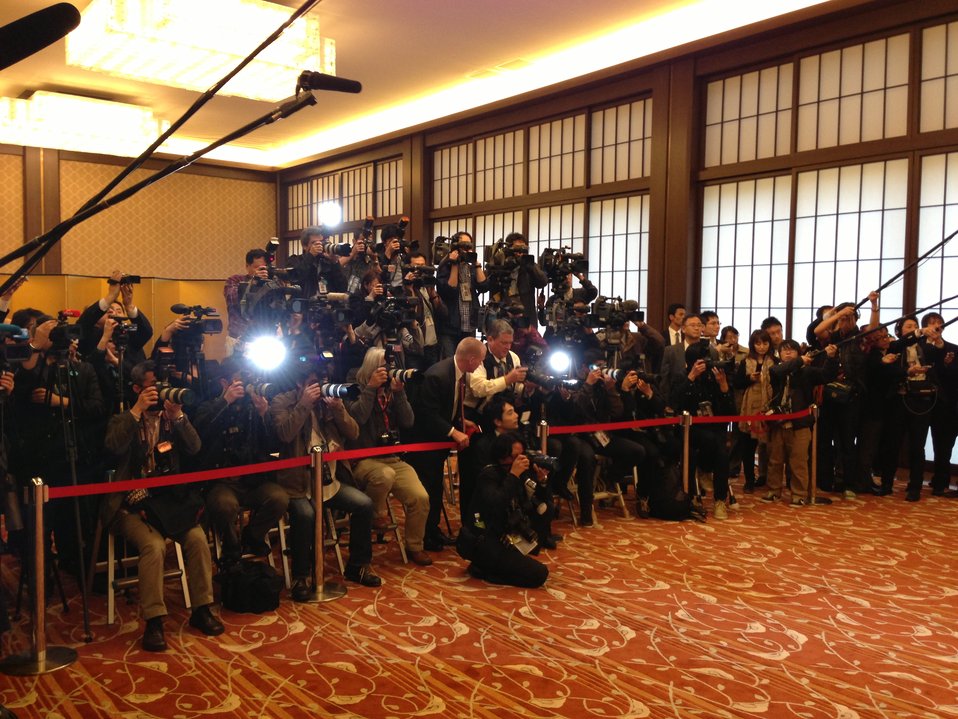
Photographers Take Pictures of Secretary Kerry

Camera flashes fire as photographers take pictures of U.S. Secretary of State John Kerry and Japanese Foreign Minister Fumio Kishida in Tokyo, Japan, on April 14, 2013.